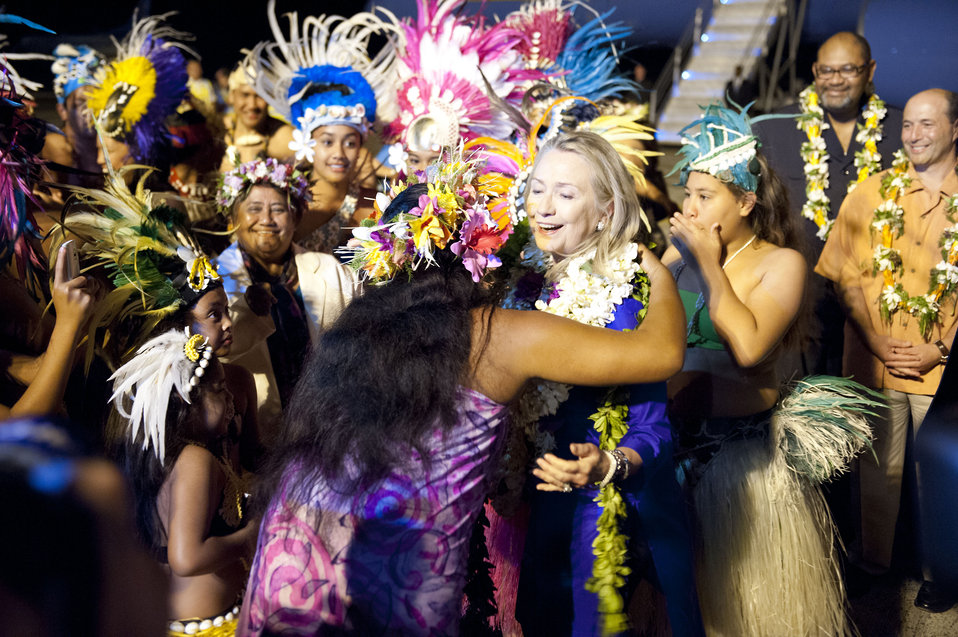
Secretary Clinton Is Welcomed to the Cook Islands

U.S. Secretary of State Hillary Rodham Clinton is welcomed to Rarotonga, the Cook Islands, August 30, 2012.